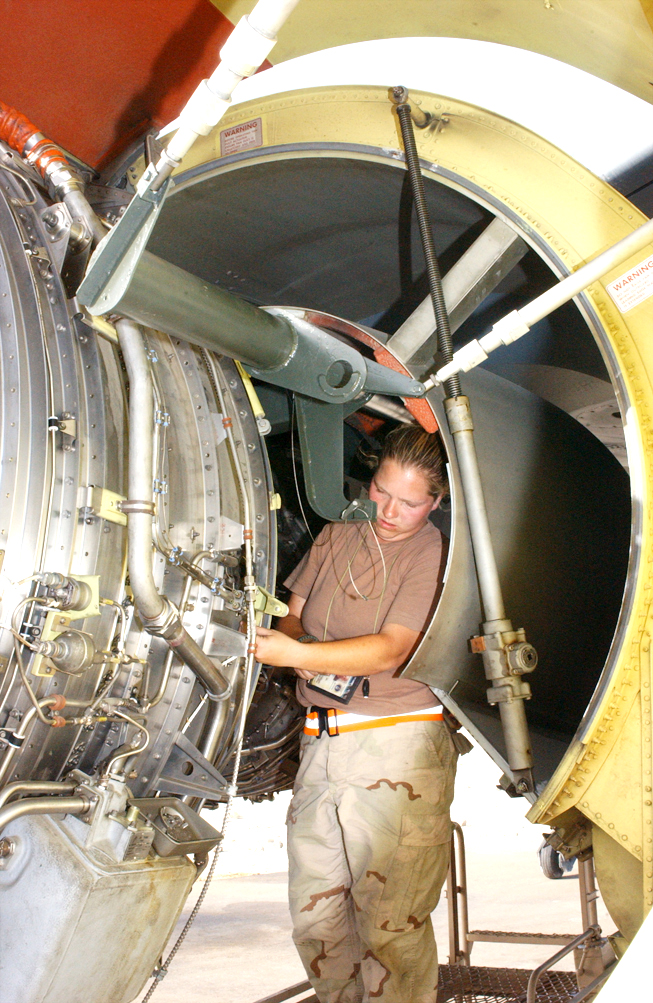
Tanker contract award announced

SOUTHWEST ASIA -- Senior Airman Abby Hernandez reconnects components of a KC-135 Stratotanker engine that was just installed. KC-135 engines are very reliable and rarely have to be swapped. Airmen at a forward-deployed location recently had to replace an engine on two KC-135s in the span of about a week. Airman Hernandez is deployed with the 380th Expeditionary Aircraft Maintenance Squadron.